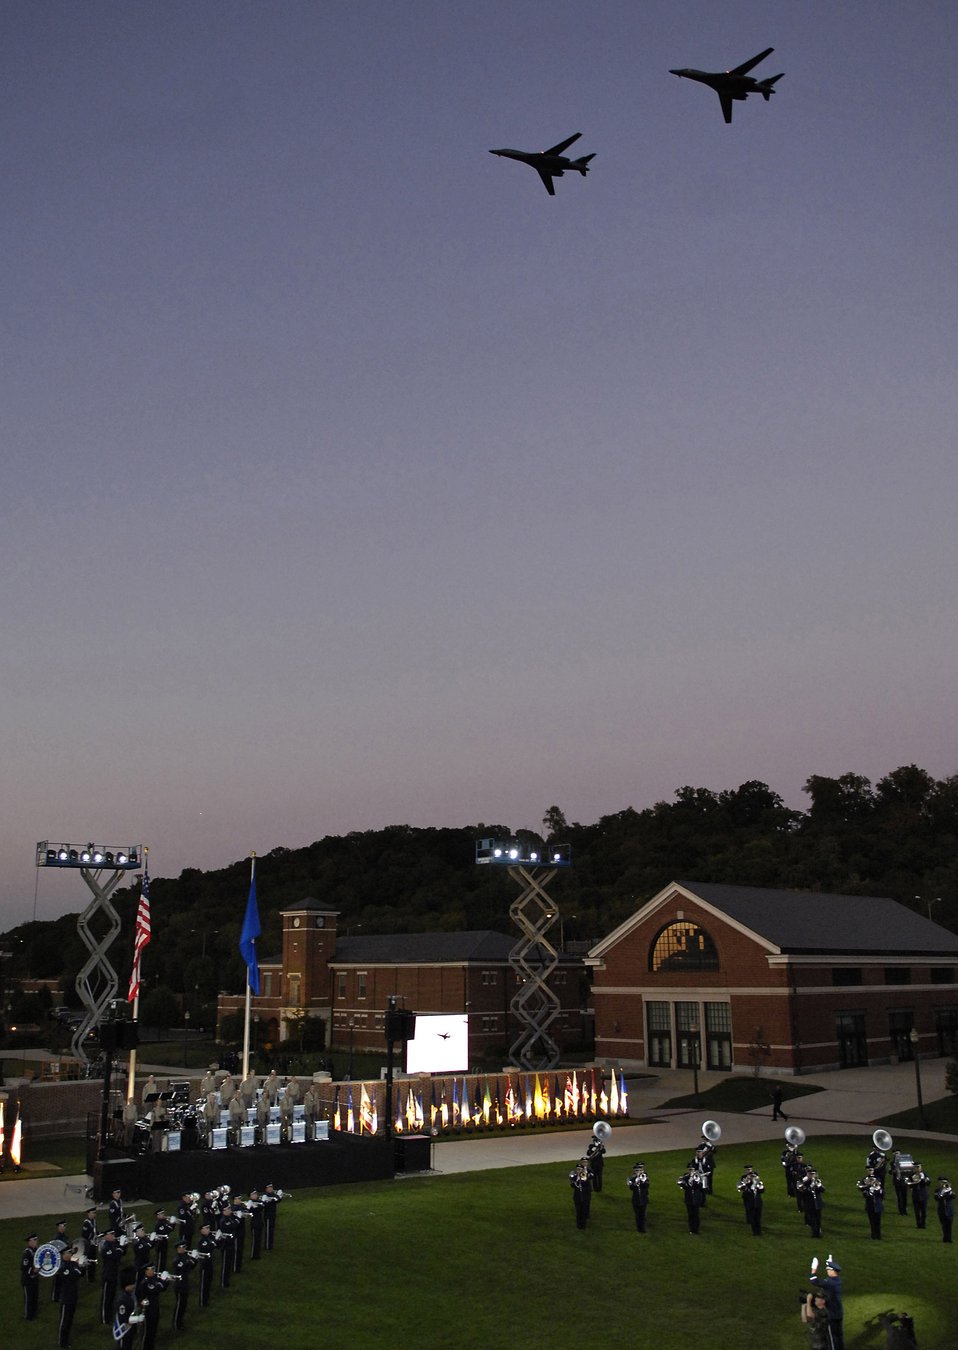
Air Force Tattoo

Two B-1B Lancers fly over the Ceremonial Lawn during the Air Force Tattoo Sept. 23 at Bolling Air Force Base, D.C. The 2007 Air Force Tattoo, titled